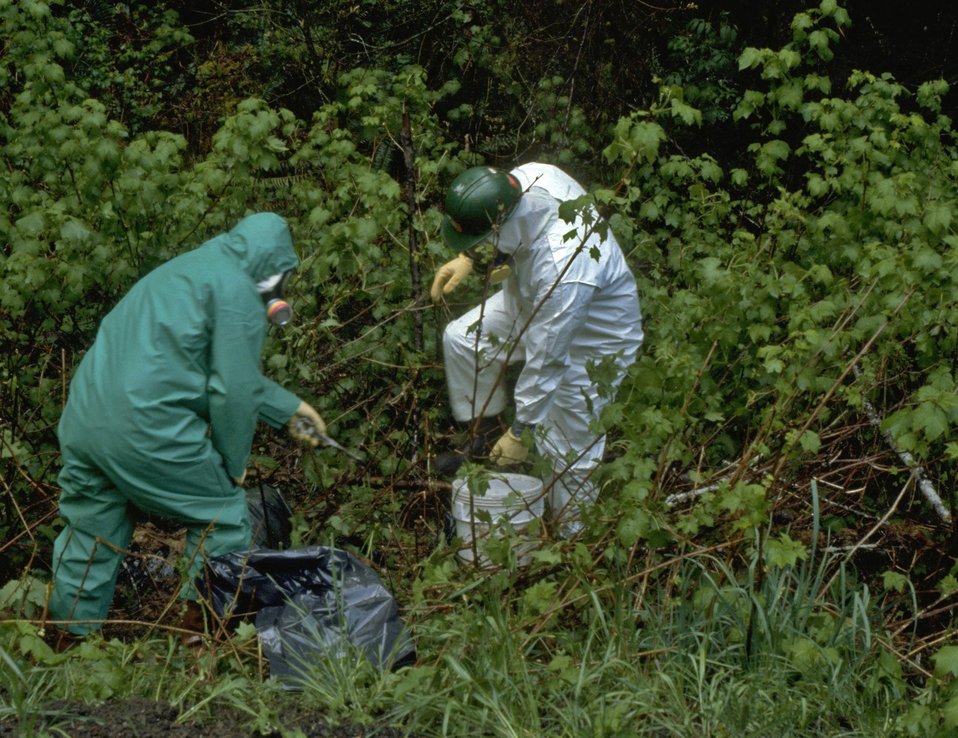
Contractor moving Hazardous Material on BLM land.